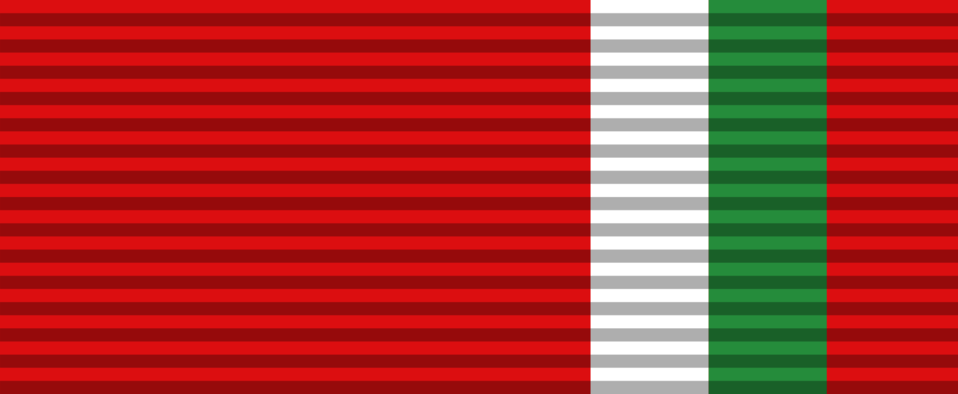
Bulgarian 100th Anniversary Of The Birth Of Georgi Dimitrov Medal Ribbon.